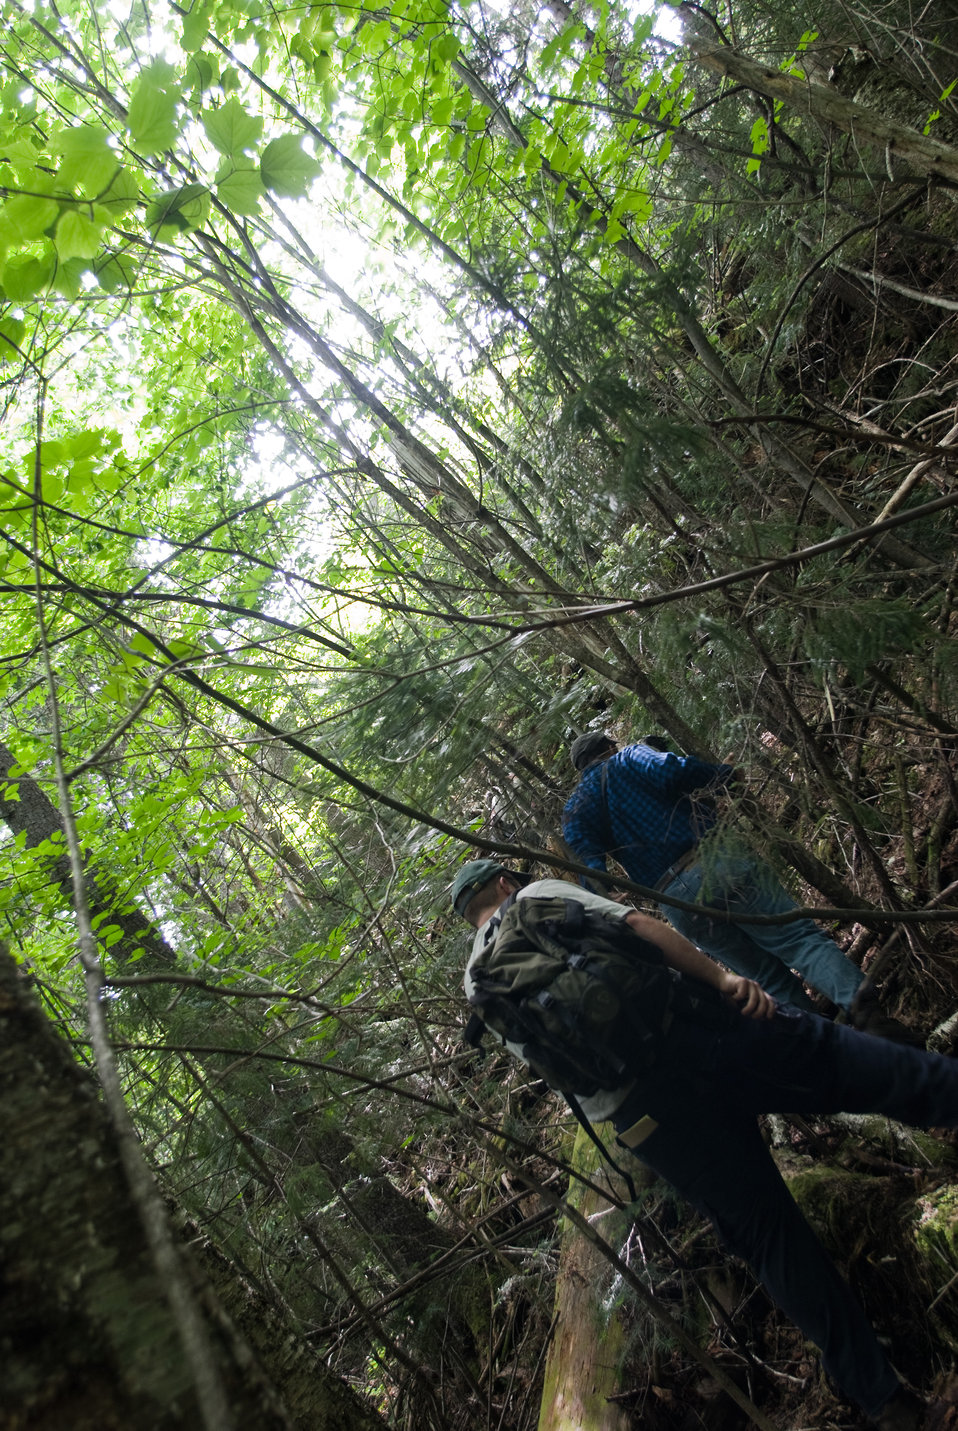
The way to the den

Teams faced thick growth and a variety of terrain while locating the den of Canada Lynx.